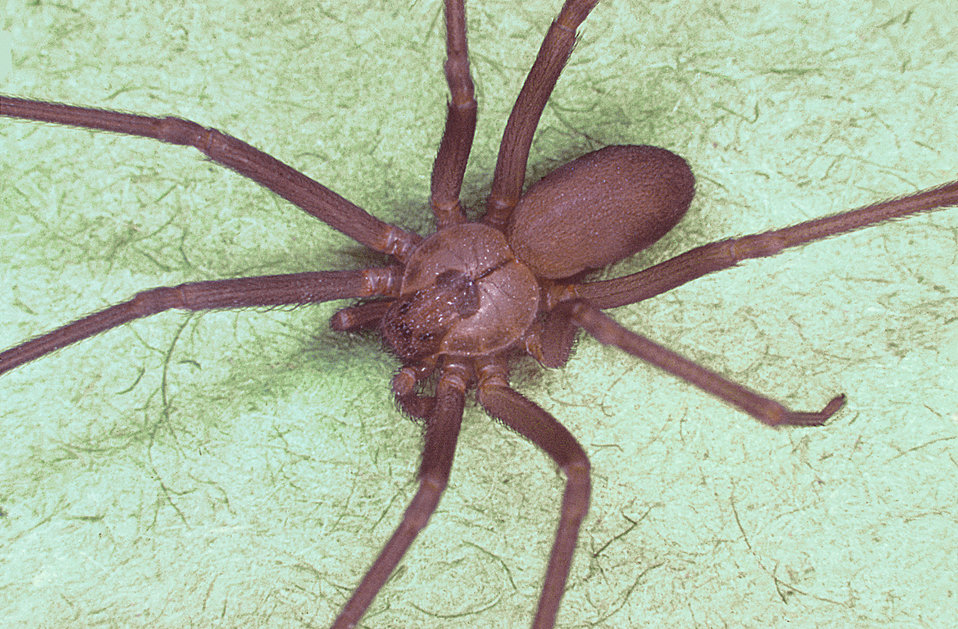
Brown recluse spider, Loxosceles reclusa.